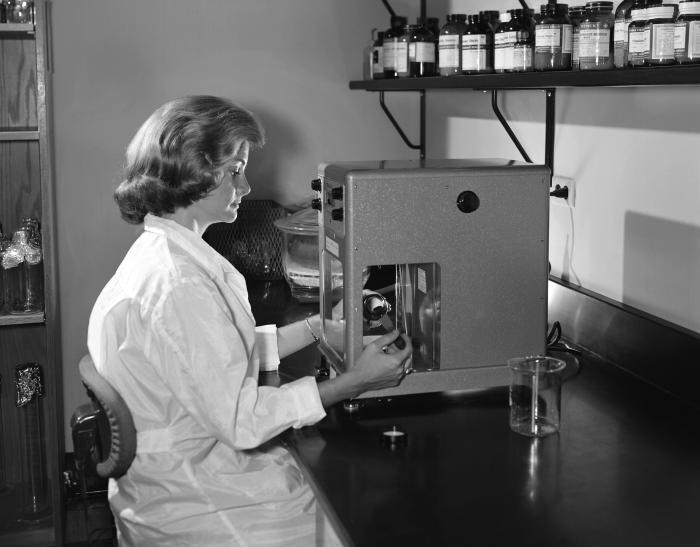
This historic 1964 photograph depicted laboratorian, Nancy Langford, a staff member in the Tissue Culture Unit, Laboratory Branch, as she was measuring out quantities of essential amino acids using an automatic balance, in order to prepare culture media.